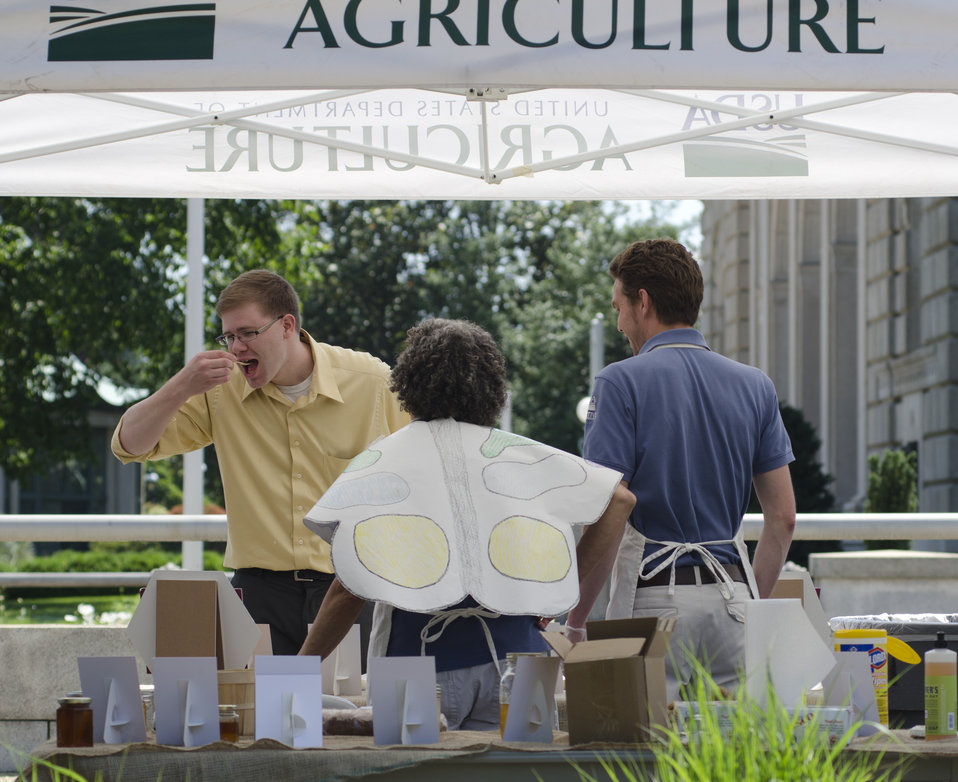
Peoples Garden Pollinator Display at the U.S. Department of Agriculture in Washington, DC, on Friday, June 21, 2013.